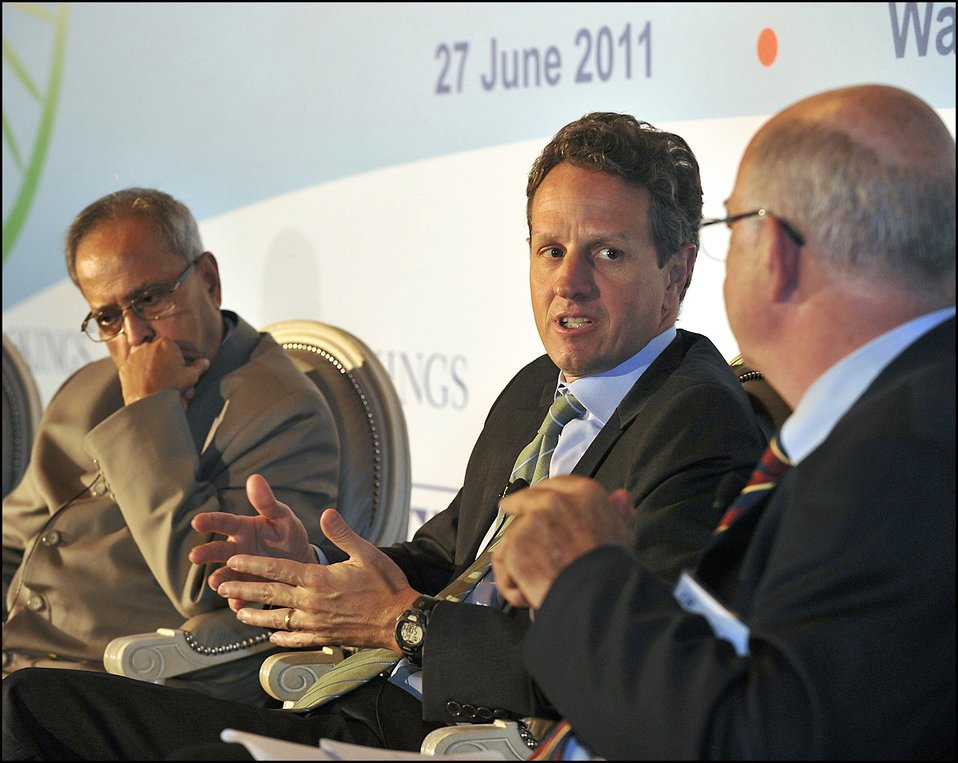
2011 U.S.-India Partnership

Senior economic and regulatory officials from both countries joined Secretary Geithner and Minister Mukherjee for this high level engagement focused on expanding opportunities and addressing key economic challenges in the U.S. and India.